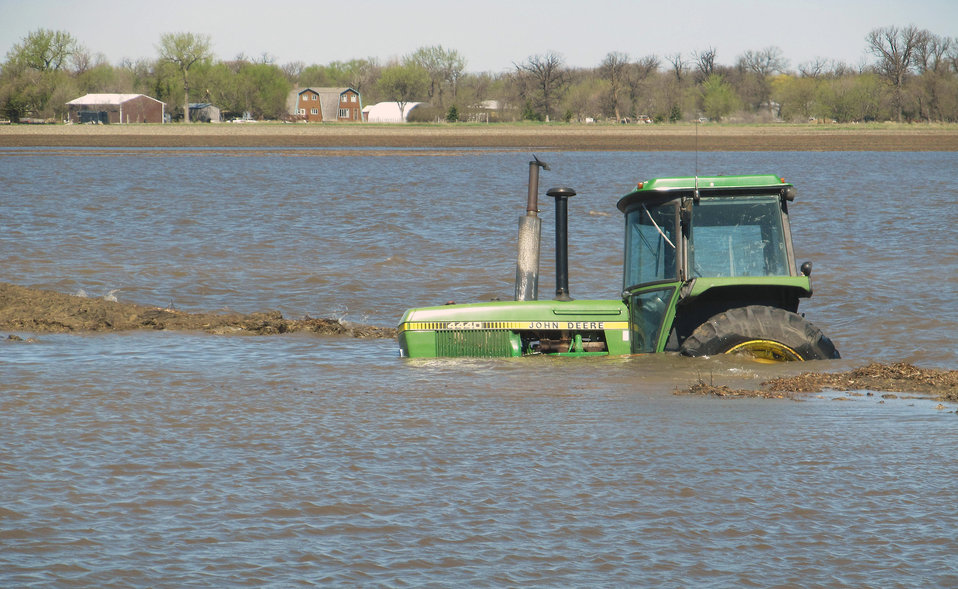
Flooding and water damage in the Park and Tongue River Watersheds located in Cavalier, Pembina and Cavalaier Counties in North Dakota on Thursday, May 23, 2013.